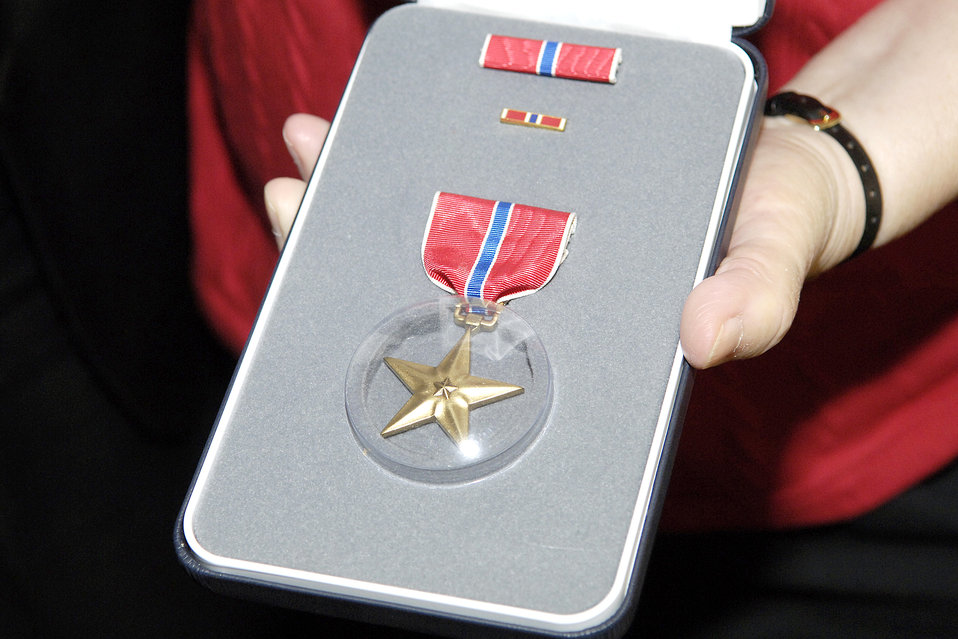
Air Force posthumously awards Bronze Star

BREWER, Maine -- The Bronze Star was posthumously presented to Staff Sgt. Merle Y. Strang on Sept. 27. Accepting the medal on his brother's behalf was the Rev. Homer Strang. Sergeant Strang was awarded the Bronze Star for his participation in the Korean War's Kiddie Car Airlift, where he was credited for saving the lives of 950 orphans and 100 orphanage staff members.